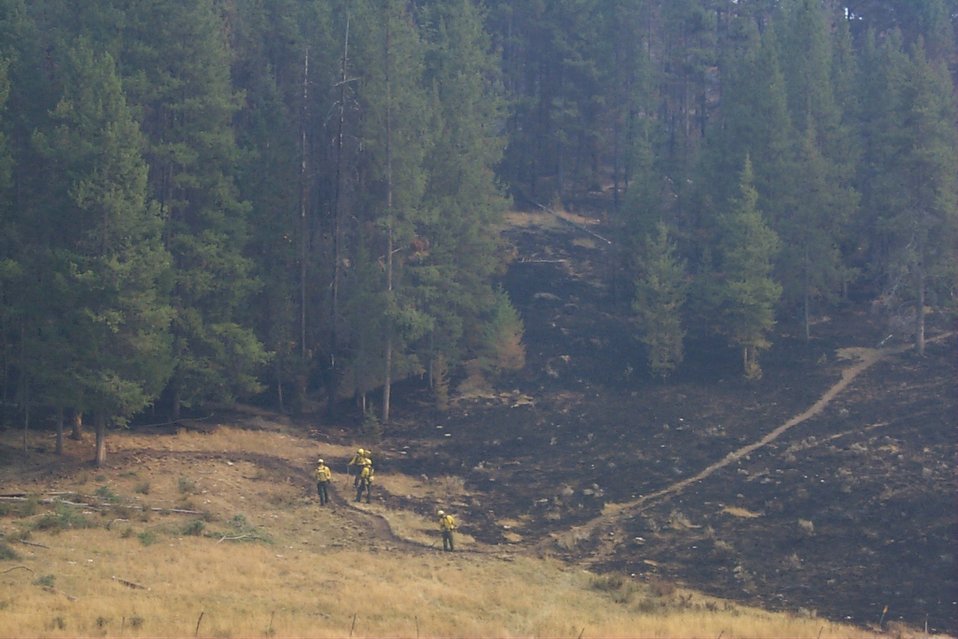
Burn area Fire Clearwater Fire Salmon Field Office USRD Upper Snake River District